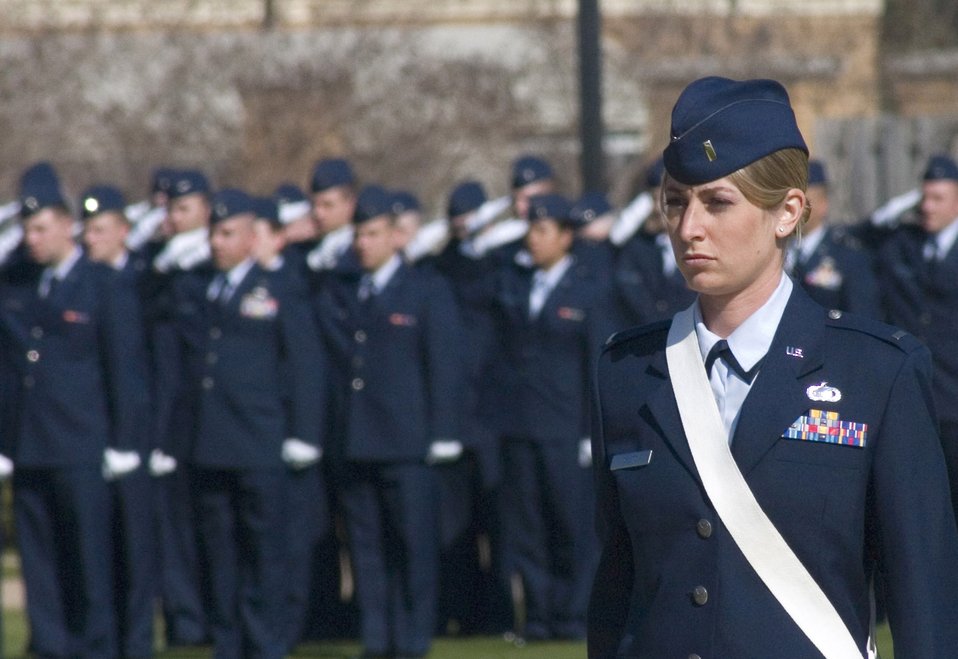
Hand-to-hand combat class graduates

Basic officer trainees salute during the playing of the National Anthem as 2nd Lt. Kristin Gwitt holds a sabre at the position of attention as part of an Officer Training School graduation parade March 12 at Maxwell Air Force Base, Ala. Sixty-six Airmen completed the 12-week basic officer training course before earning their commission.